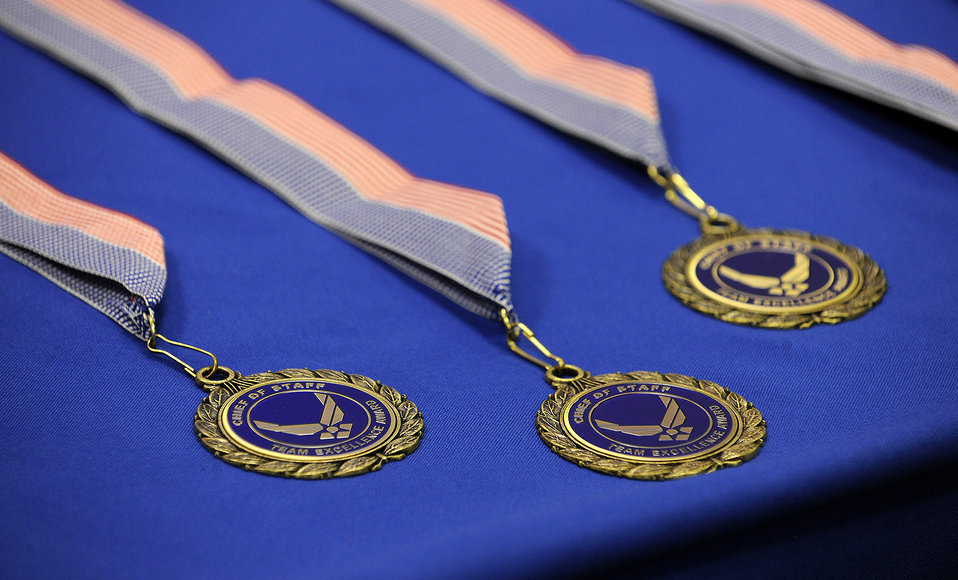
CSAF Team of Excellence awards

Medals await presentation to winning members honored during the Air Force Chief of Staff Team Excellence awards in a Pentagon ceremony on Nov. 27, 2012. The three teams which made the finals and recognized today were the Electronic Flight Bag Team from Headquarters, Air Mobility Command at Scott Air Force Base, Ill.; Air Force Research Laboratory's Radar Relocation Project Management Team, from the 213th Engineering Installation Squadron in Newburgh, N.Y.; and the B-2 Window Change Continuous Process Improvement Team, from the 509th Aircraft Maintenance Group, from Whiteman Air Force Base, Mo.